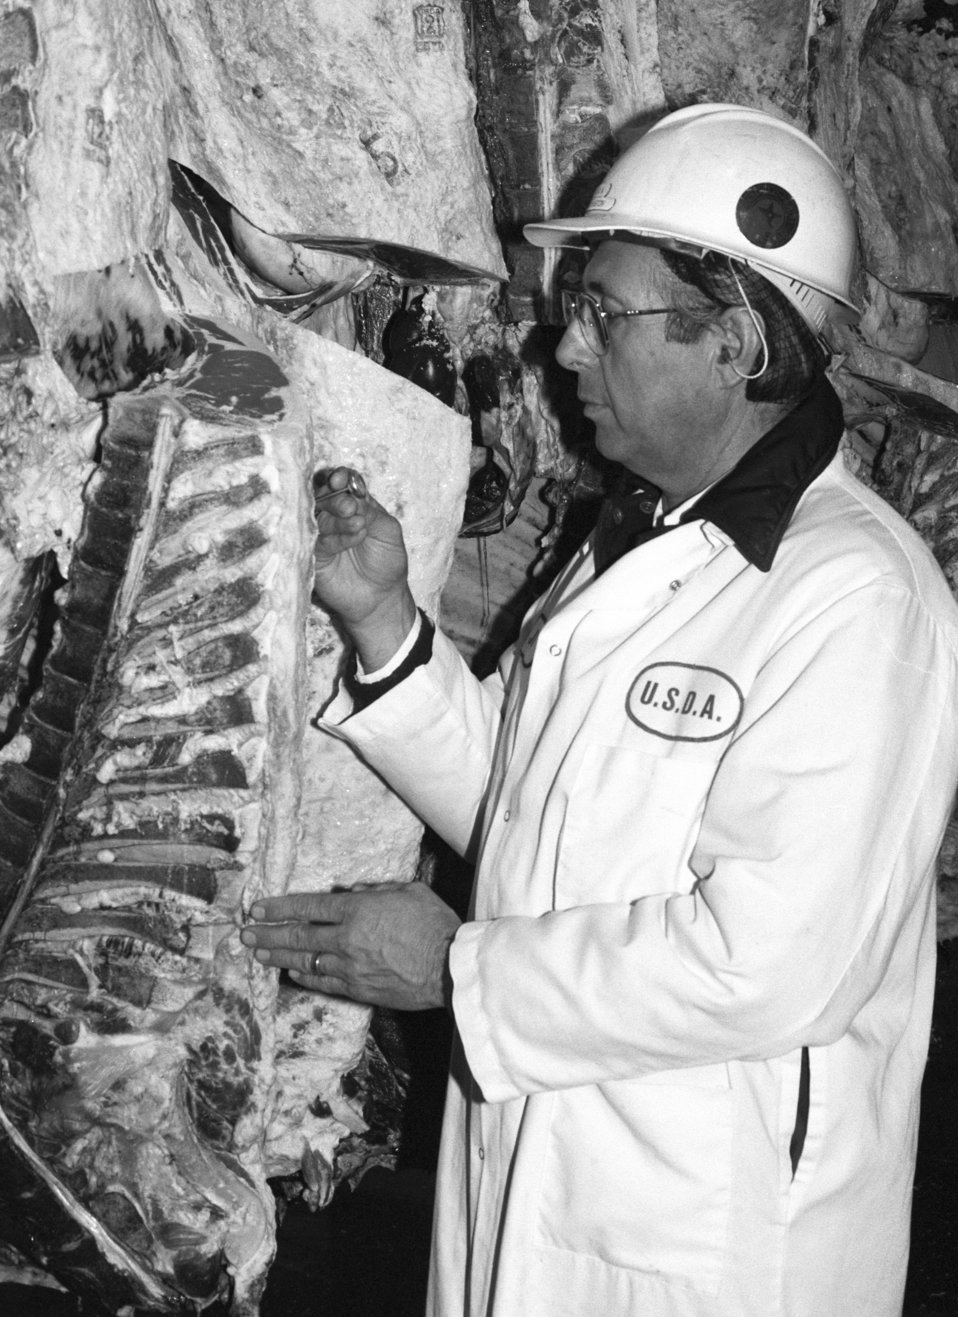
U.S. Department of Agriculture (USDA) Food Safety Inspection Service (FSIS) inspectors inspect beef using a Streamline Inspection System (SIS) at a processing plant in Plainview, TX on January 22, 1991.